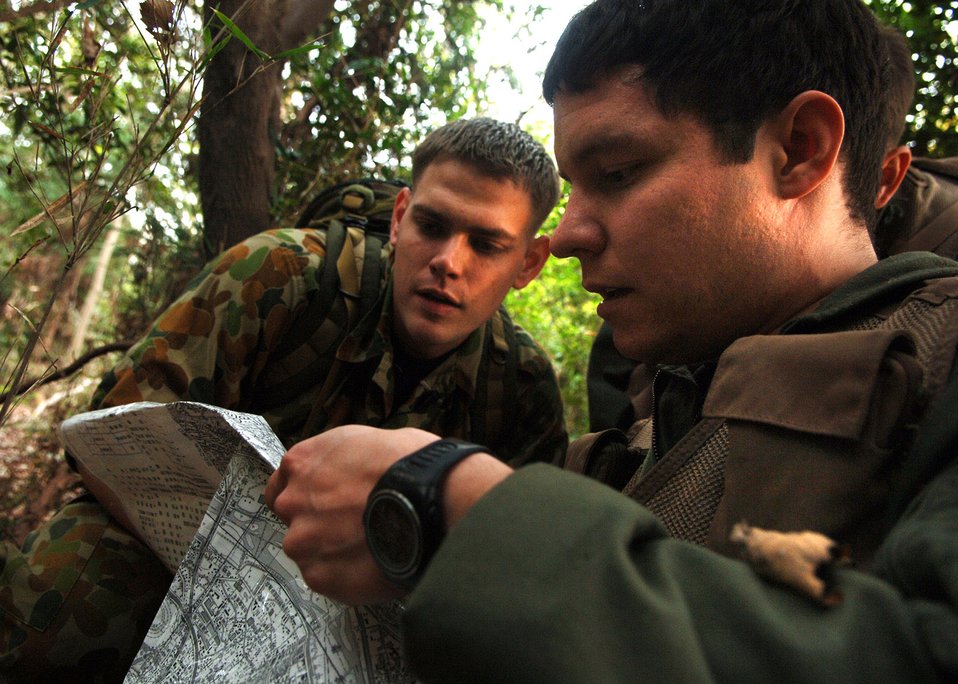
Training to survive

Senior Airman Jason Davis trains Capt. Pierre Alvarado mapping and Global Positioning System skills April 10 at the Tama Hills Recreation Center near Yokota Air Base, Japan. Airman Davis is a a survival, evasion, resistance and escape specialist from the 374th Operational Support Squadron, and was recognized as the 2006 Pacific Air Forces SERE Airman of the Year. SERE specialists train members from all branches of the military on how to survive in all environments and conditions. Captain Alvarado is from the 36th Airlift Squadron.